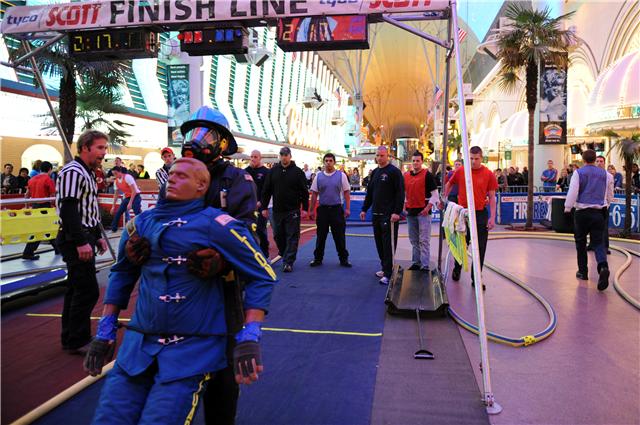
To the rescue

Dave Chiodo